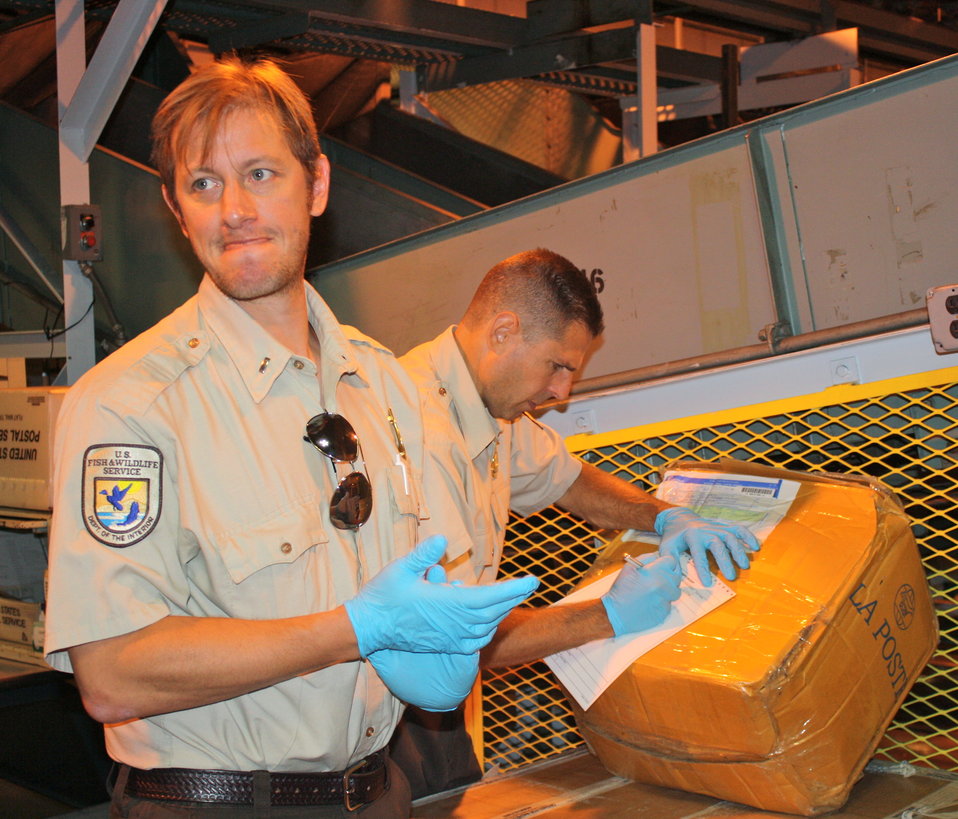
Inspecting a shipment at the U.S. Postal Service facility in ELizabeth, N.J.

Inspector from the Elizabeth, N.J. Office of Law Enforcement.